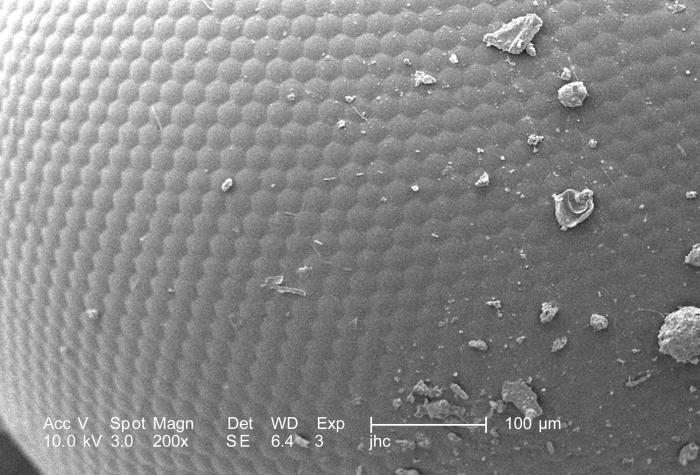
At a moderate magnification of 200X, this scanning electron micrograph (SEM) depicted some of the morphologic details of one of the two compound eyes used by an unidentified bug that had been found deceased in the suburbs of Decatur, Georgia. The scattered particulate matter adorning the insect's exoskeletal surface was merely environmental debris common to its habitat.